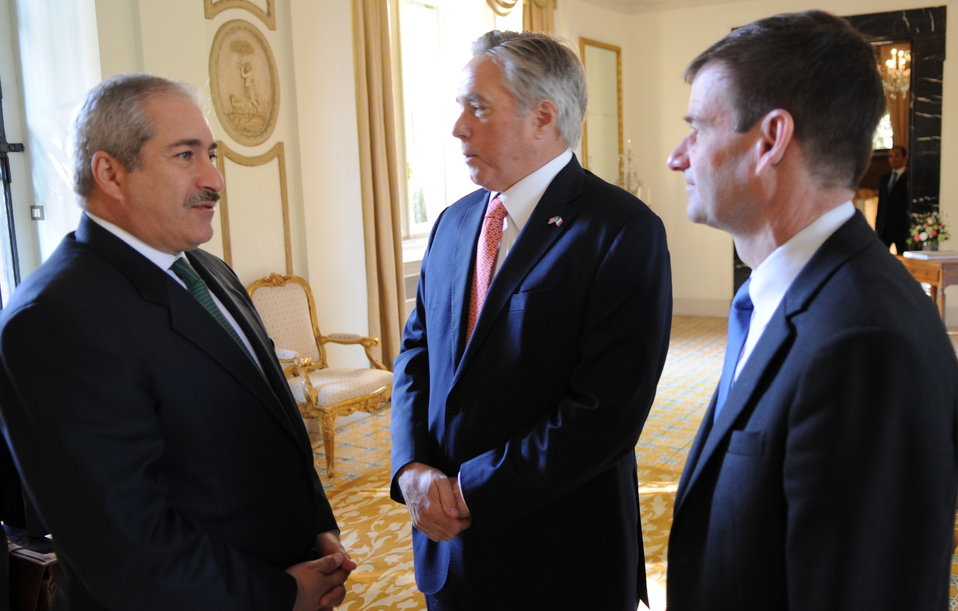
Jordanian Foreign Minister Judeh Chats With Special Envoy Hale

Jordanian Foreign Minister Nasser Judeh speaks with U.S. Ambassador to Italy David Thorne and Special Envoy for Middle East Peace David Hale in Rome, Italy, on May 9, 2013.